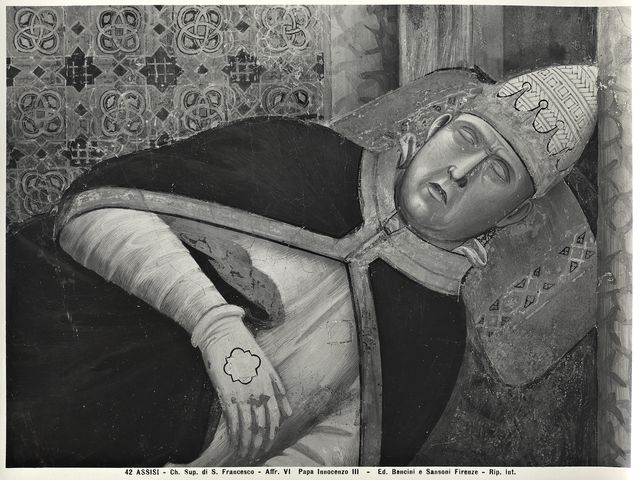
'giotto', sogno di innocenzo III 15